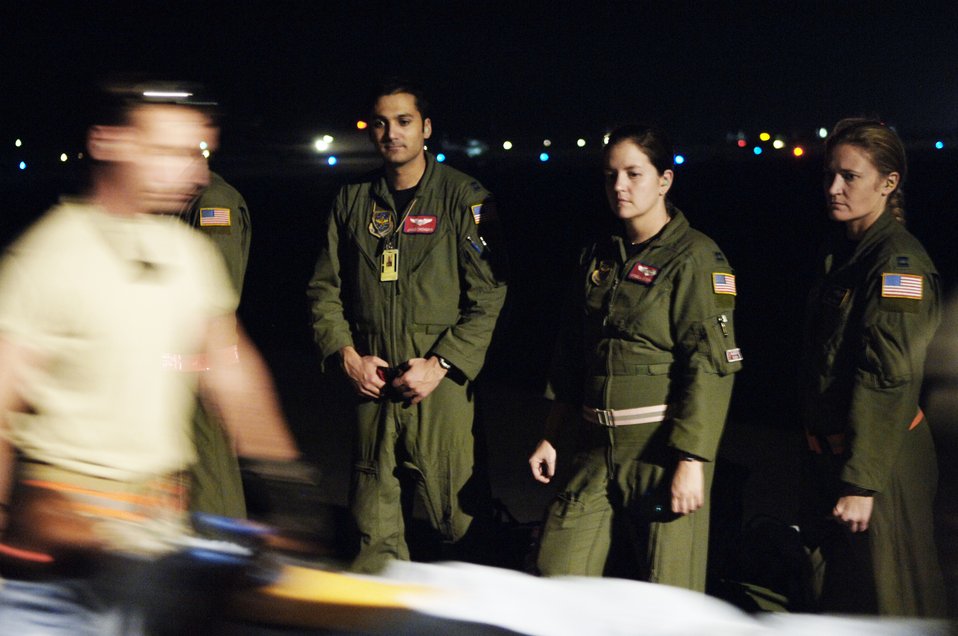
Air Force 'angels' rescue injured Haitians

Capts. James Chongris, Angela Stephens and Kristina Lamothe (left to right), look on as patients are brought onboard a C-130 Hercules for an aeromedical evacuation mission Jan. 22, 2010 in Haiti. Captains Chongris, Stephens and Lamothe are assigned to the 39th Airlift Squadron.